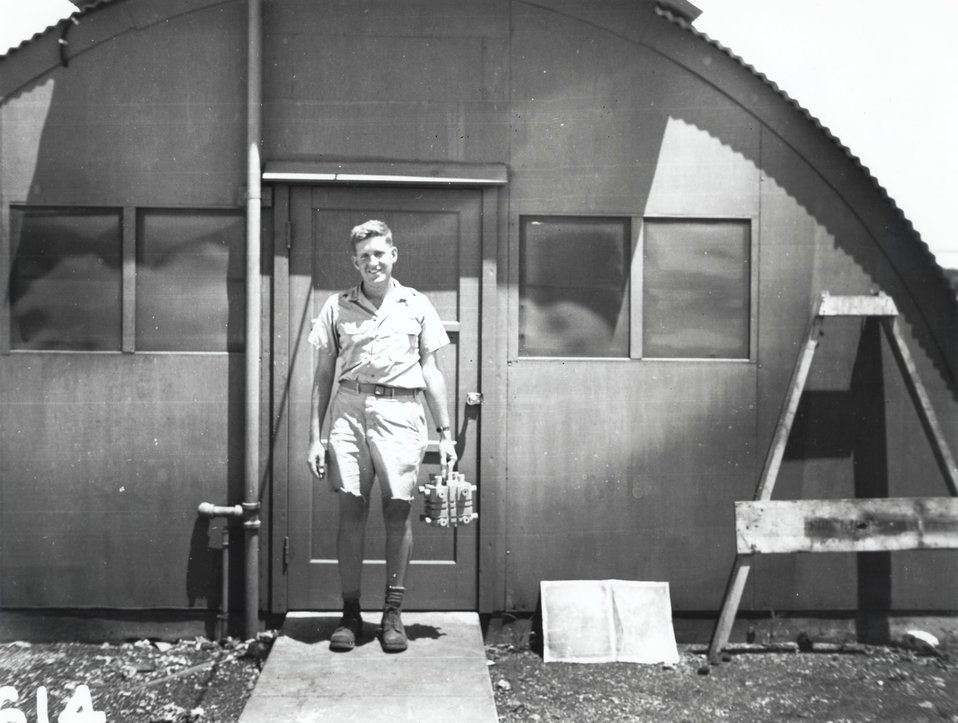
HAROLD AGNEW ON TINIAN